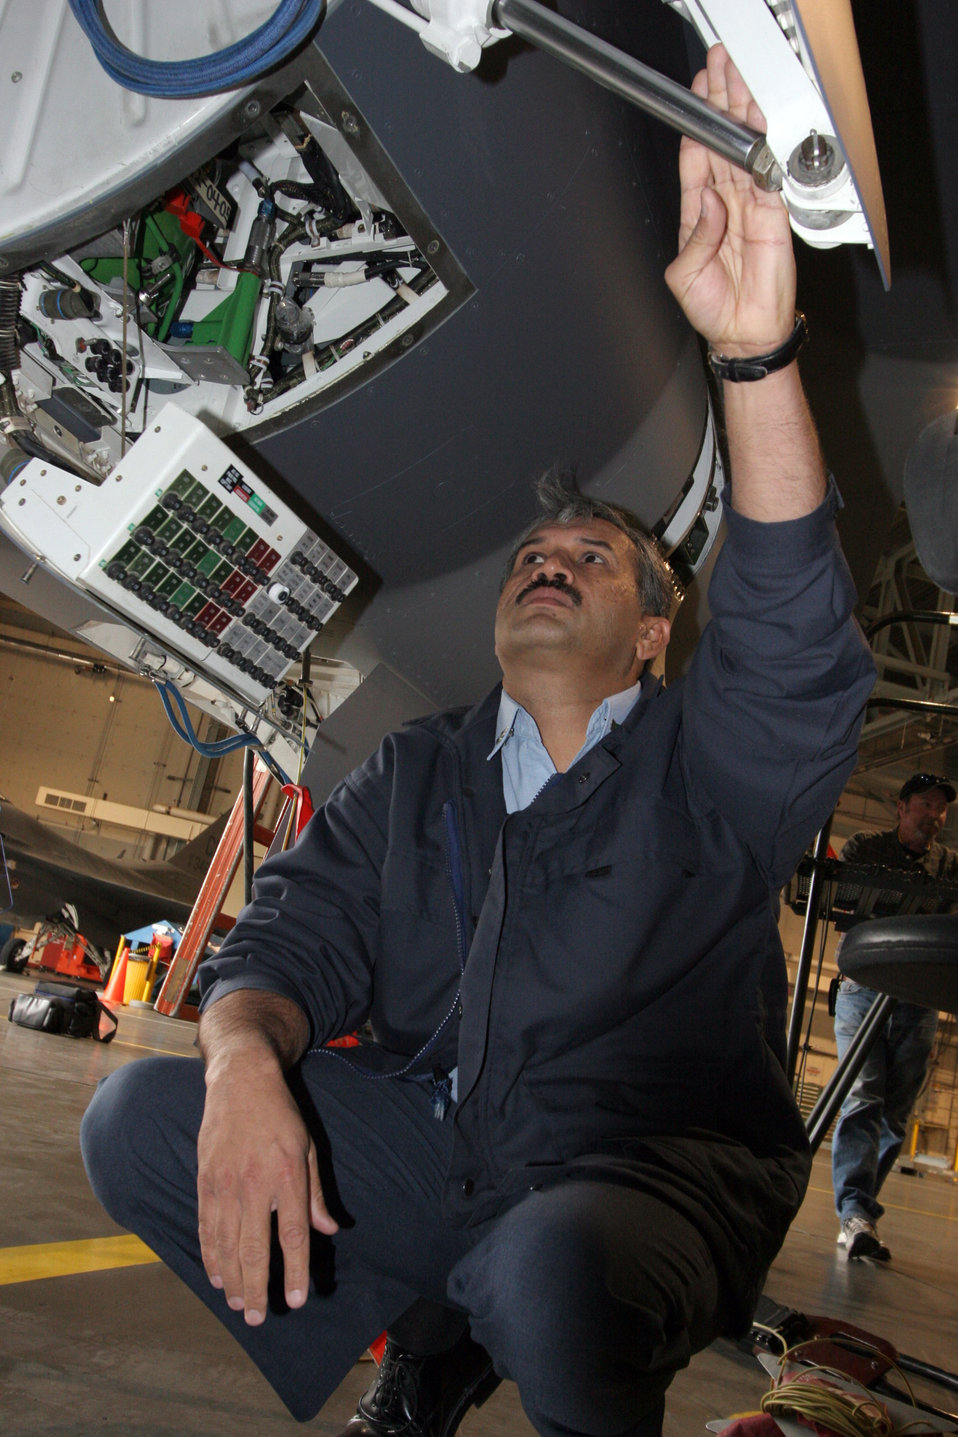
Pakistan bound

HILL AIR FORCE BASE, Utah (AFPN) -- Lt. Col. Mujahid Khan inspects the landing gear wheel well of one of the two F-16 Fighting Falcons being transferred to Pakistan. Two upgraded Air Force F-16s were delivered to the Pakistani air force Dec. 12. Colonel Mujahid Khan is the Pakistani F-16 support program liaison here.